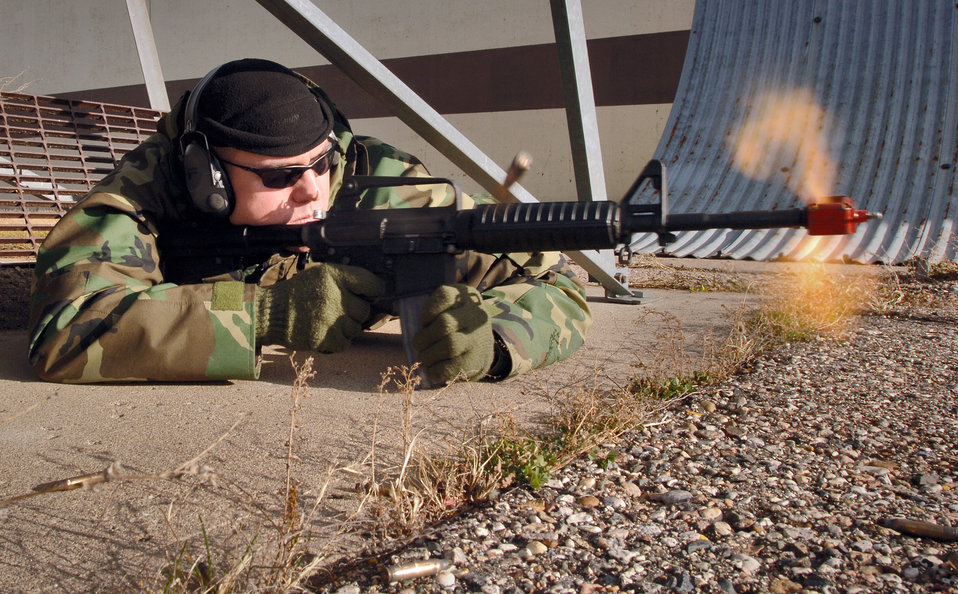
Deployment exercise

MINOT AIR FORCE BASE, N.D. (AFPN) -- Staff Sgt. Kevin Beasley fires his M-16 rifle during an exercise. The exercise on Nov. 10 trained Airman here on expeditionary combat skills before their Air and Space Expeditionary Force deployments. Sergeant Beasley is the noncommissioned officer in charge of the 5th Civil Engineer Squadron explosive ordnance disposal flight.